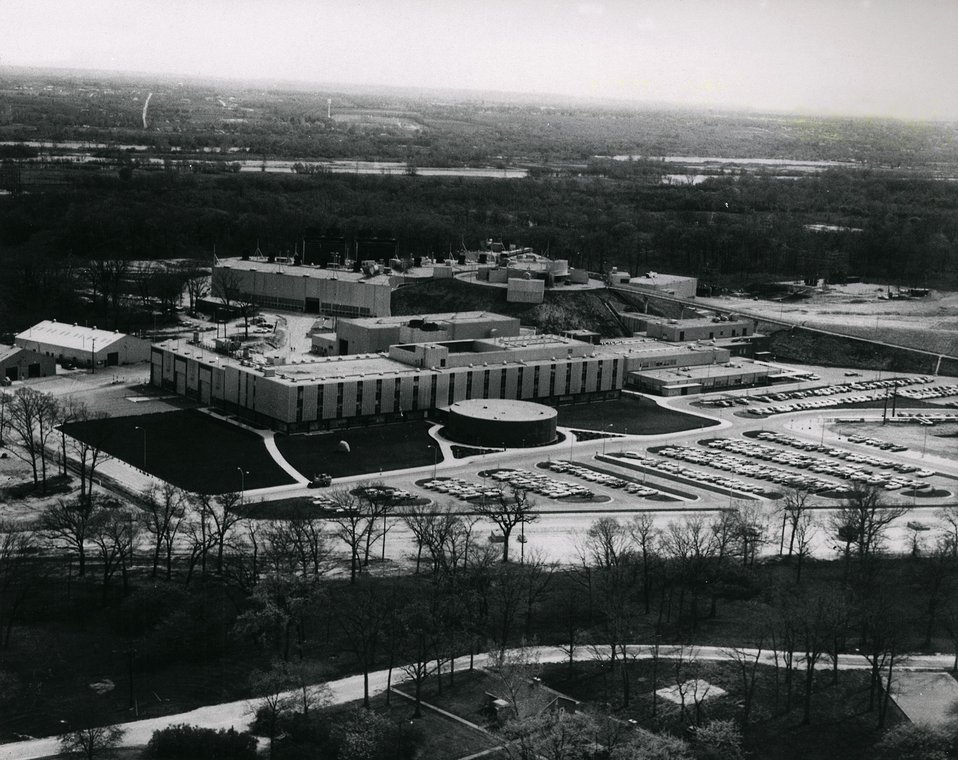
The ZGS at Argonne was completed in August 1963. c.1964